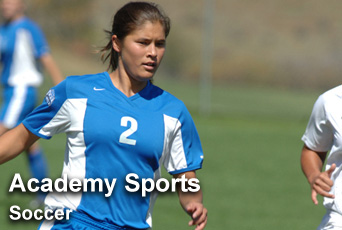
Academy sports: Soccer

For up-to-date scores on all U.S. Air Force Academy sports, visit their Web site at www.goairforcefalcons.com.